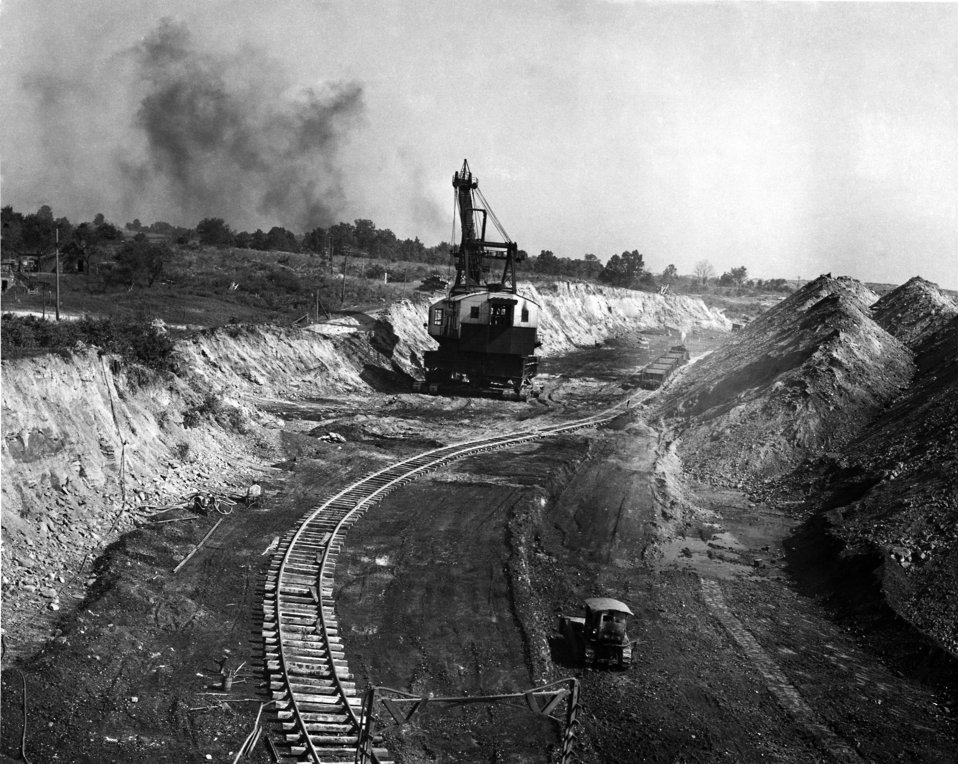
This was one of three images of a 1947, Indiana strip mining project underway, which depicted a bucket crane in the process of excavating an unknown collection of raw materiel. This image was provided by the Center for Disease Control's (CDC), National Institute for Occupational Safety and Health (NIOSH). See PHIL 9552 and 9554 for two additional images of this scenario.